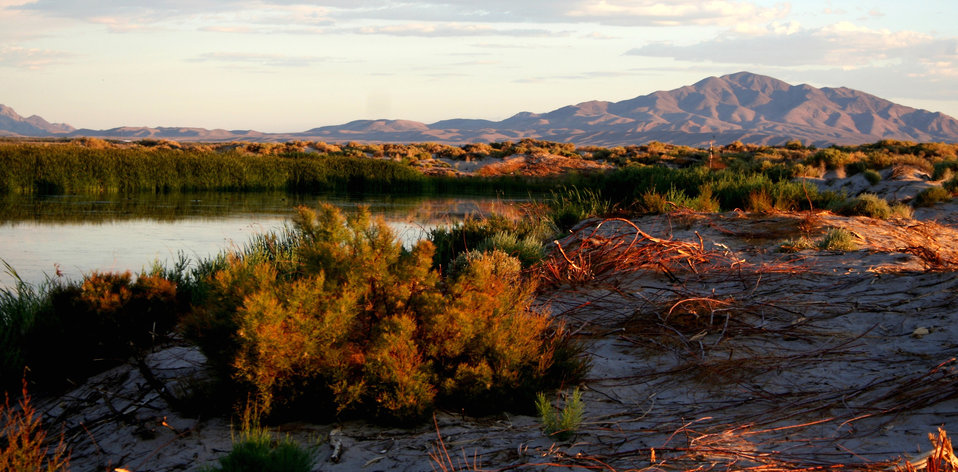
Ash Meadows NWR

Ash Meadows National Wildlife Refuge, established June 18, 1984, is located approximately 90 miles northwest of Las Vegas in the Amargosa Valley of southern Nye County, Nevada. To date, over 23,000 acres of spring-fed wetlands and alkaline desert uplands are managed by the U.S. Fish and Wildlife Service. The refuge provides habitat for at least 24 plants and animals found nowhere else in the world. Four fish and one plant are currently listed as endangered.

This concentration of indigenous life distinguishes Ash Meadows NWR as having a greater concentration of endemic life than any other local area in the United States and the second greatest in all of North America. Ash Meadows provides a valuable and unprecedented example of desert oases that are now extremely uncommon in the southwestern United States.